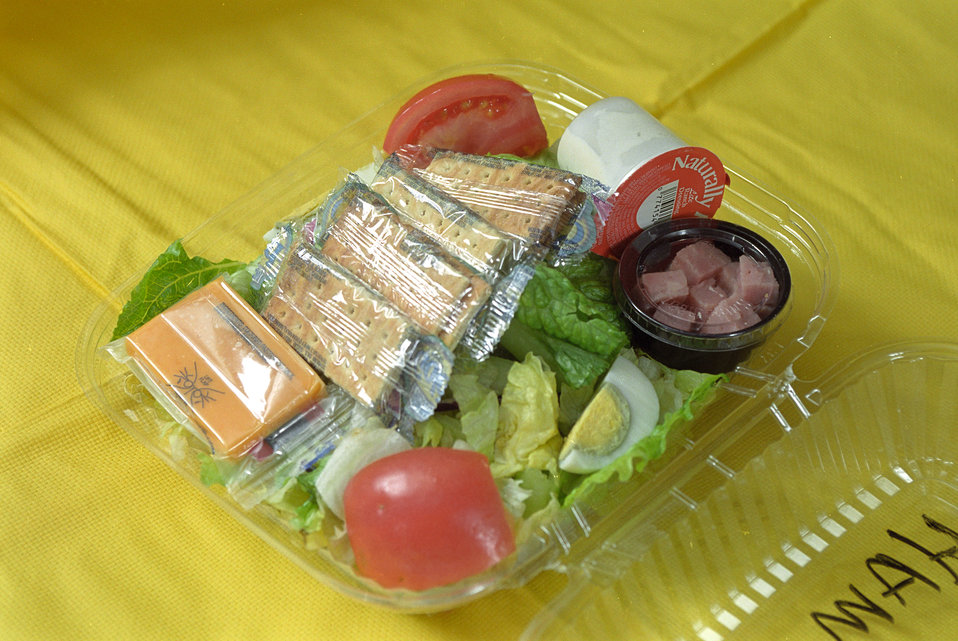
A nutritious lunch is prepared at a school in St. Petersburg, FL on January 15, 2003. The U.S. Department of Agriculture's (USDA) Food and Nutrition Service (FNS) Fresh Fruit and Vegetable Program (FFVP) was introduced to schools in 2003. The FFVP provides all children in participating schools with a variety of free fresh fruits and vegetables throughout the school day. It is an effective and creative way of introducing fresh fruits and vegetables as healthy snack options. The FFVP also encourages schools to develop partnerships at the State and local level for support in implementing and operating the program. The Goal of the FFVP is to create healthier school environments by providing healthier food choices, expand the variety of fruits and vegetables children experience, increase children’s fruit and vegetable consumption, and make a difference in children’s diets to impact their present and future health.